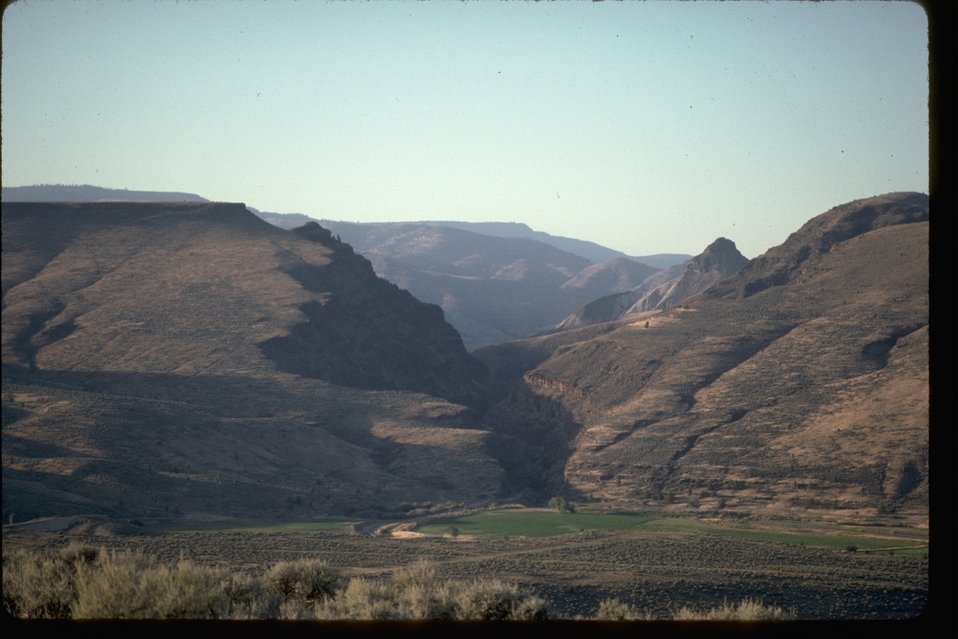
Picture of the Gorge.